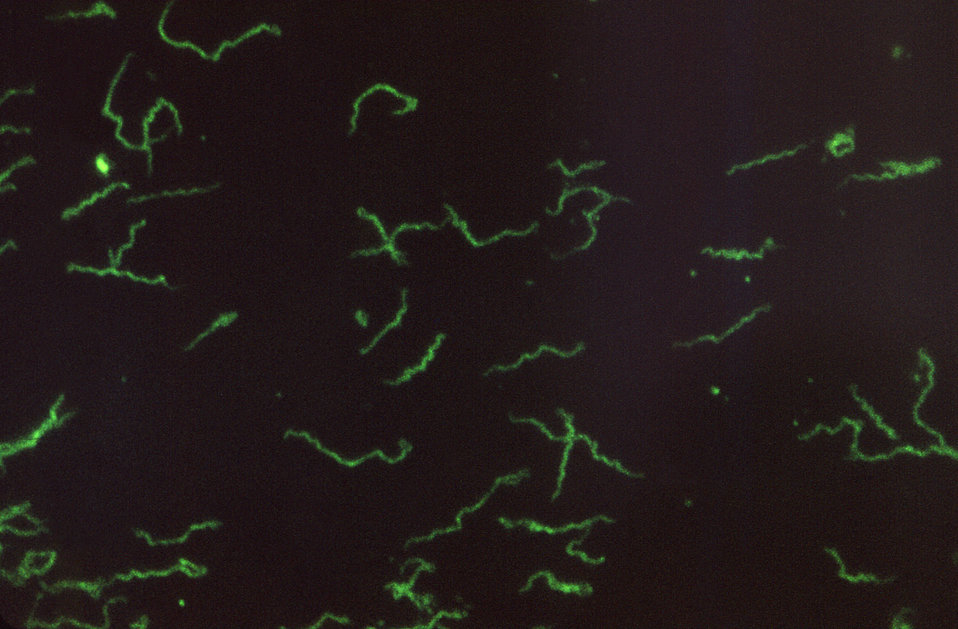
Using ultraviolet (UV) illumination, this photomicrograph reveals the presence of numerous Treponema pallidum spirochetes. By using the indirect fluorescent antibody (FA) staining method, the specimen had been treated with Fluorescent Treponemal Antibody (FTA) Antigen, which made these bacteria glow under UV illumination. This specimen was extracted from a purified Treponema suspension from the Oak Ridge fraction 12.